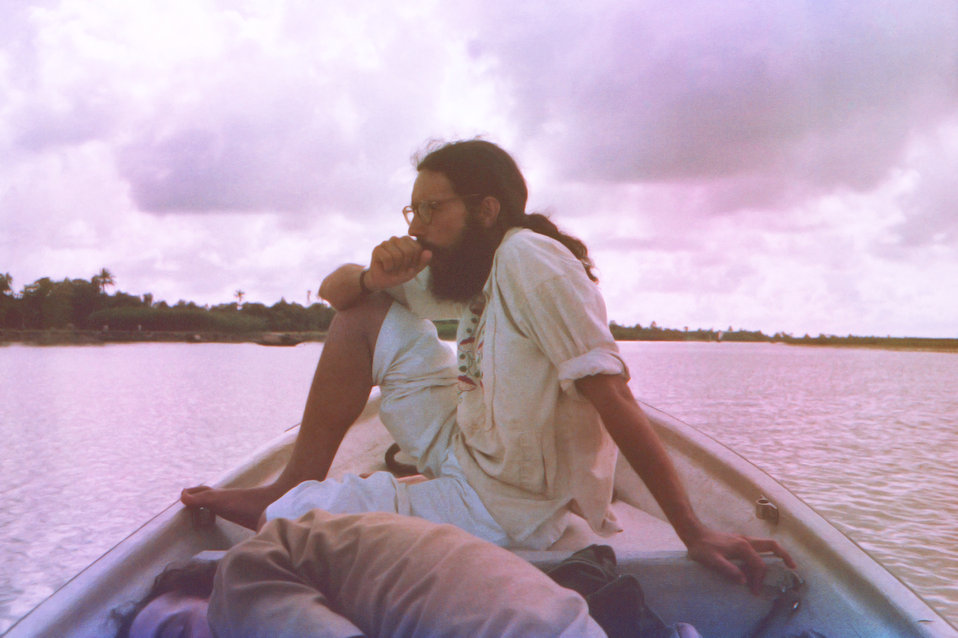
This image, captured in September, 1975, depicted the 'Smallpox Eradication Program Area Coordinator', Dr. Jason Weisfeld (U.S.A.), while riding in a smallpox 'speedboat', as he was being transported from Barisal to Bhola Island, which is the largest island in the country of Bangladesh. Bhola Island is situated in the lower delta of the Ganges and Bramaputra rivers, where the waters merge with the Bay of Bengal. Dr. Weisfeld was on his way to the 'Lord Harding Bazaar' smallpox outbreak.